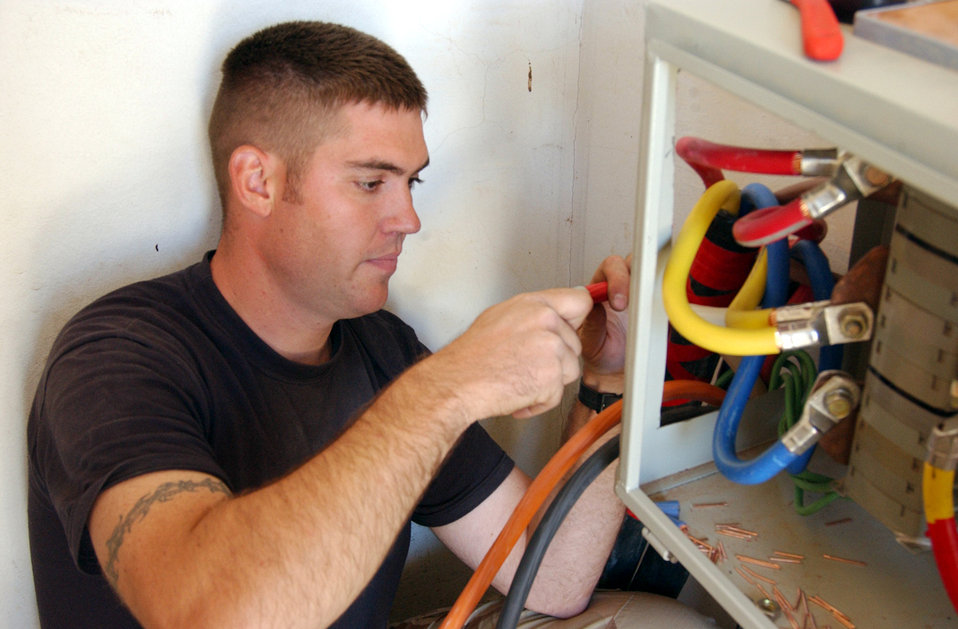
The old switcheroo

BALAD AIR BASE, Iraq -- Staff Sgt. Jason Wintersteen installs a transfer switch to restore emergency and commercial power to a building here. Sergeant Wintersteen is an electrician with the 332nd Expeditionary Civil Engineer Squadron and is deployed from the 347th Civil Engineer Squadron at Moody Air Force Base, Ga.